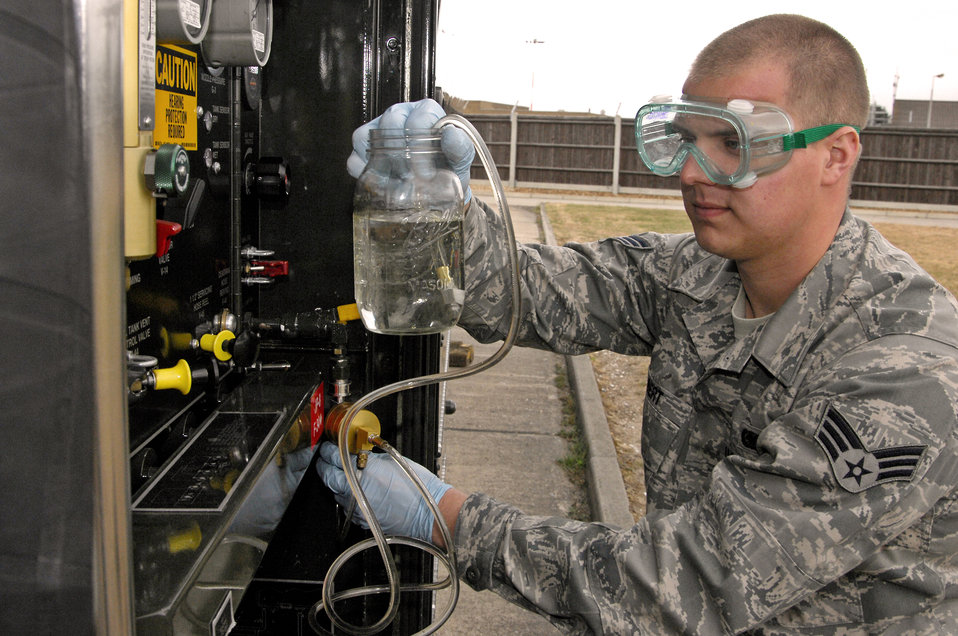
Fueling the fight

Senior Airman Justin Gilbert collects a fuel sample for testing May 26, 2011, at Royal Air Force Lakenheath, England. Airman Gilbert is a fuels laboratory technician assigned to the 48th Logistics Readiness Squadron.